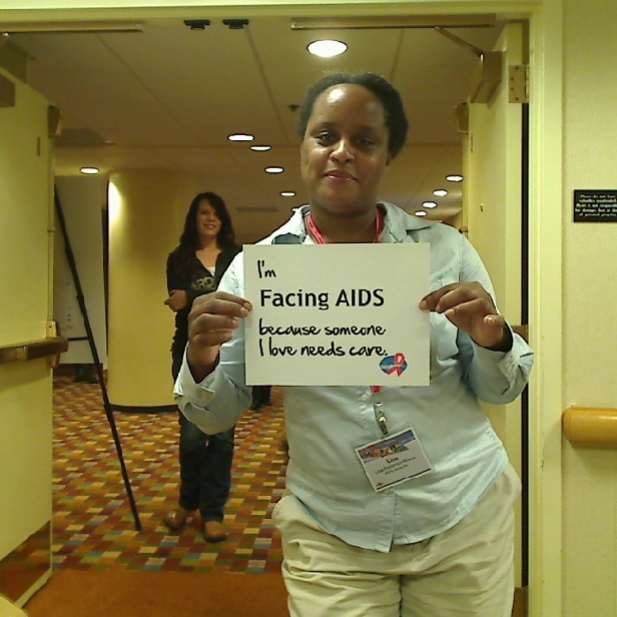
I'm Facing AIDS because someone I love needs care.